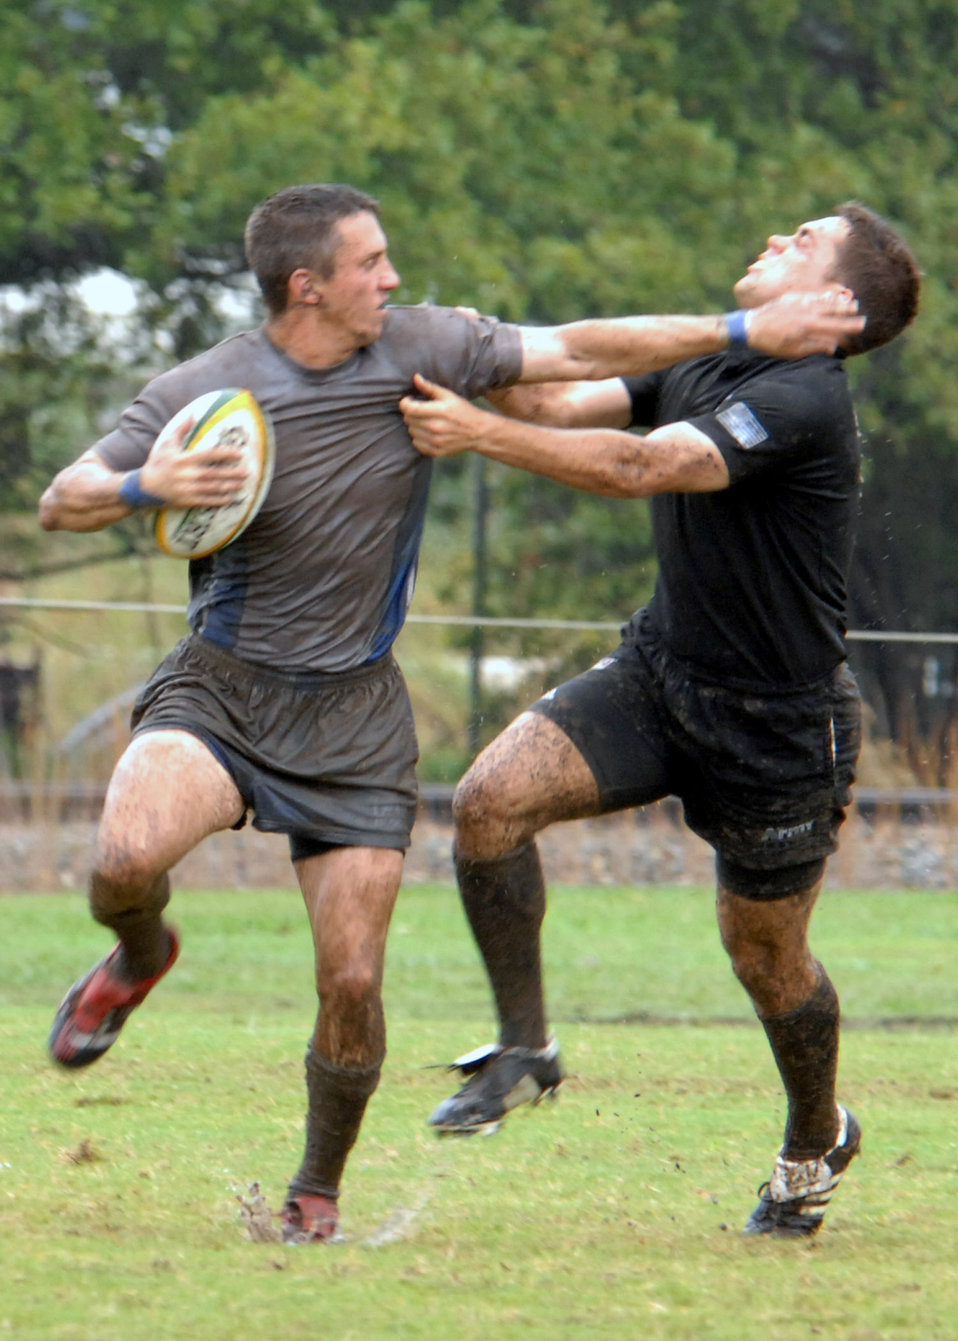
Air Force triumphs over Army

Air Force rugby player John McQuade stiff arms an Army player during the 2007 Armed Forces Rugby Tournament Oct. 27 at Marine Corps Base Camp Lejeune, N.C. Air Force defeated the Army 22-5 for a fourth consecutive championship victory.